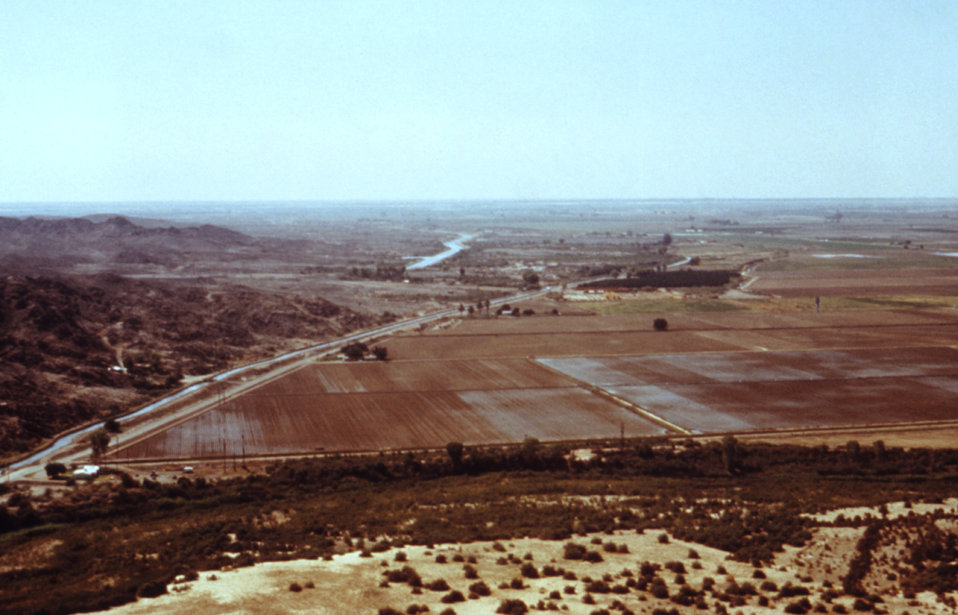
This is a 1976 aerial photograph showing an irrigation canal and fields taken in Arizona.